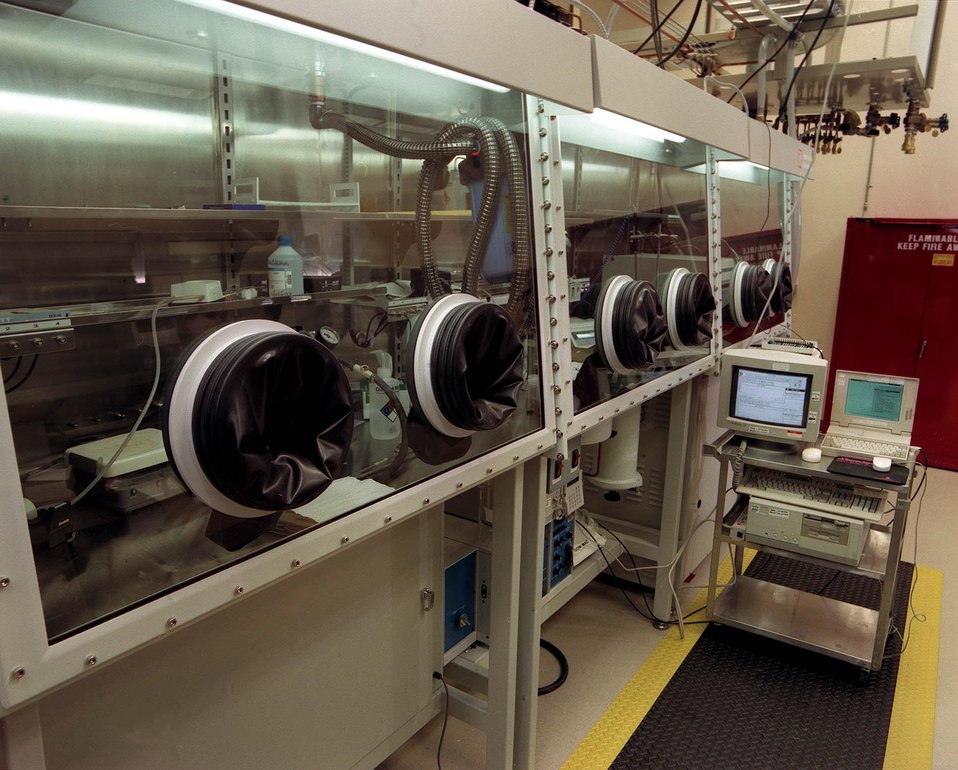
CONTROLLED ATMOSPHERE ENVIRONMENTAL CHAMBERS, WILLIAM R. WILEY ENVIRONMENTAL MOLECULAR SCIENCES LAB AT PNNL.

THESE THREE-STATION SINGLE SIDED CONTROLLED ATMOSPHERE ENVIRONMENTAL CHAMBERS ALLOW FOR SPECTROSCOPIC ANALYSIS IN A CONTROLLED ATMOSPHERE. EACH STATION HAS THE NECESSARY GAS PURIFICATION AND FILTRATION EQUIPMENT FOR MAINTAINING AN OXYGEN-AND MOISTURE-FREE ATMOSPHERE OF NITROGEN AT AMBIENT PRESSURE AND TEMPERATURE.